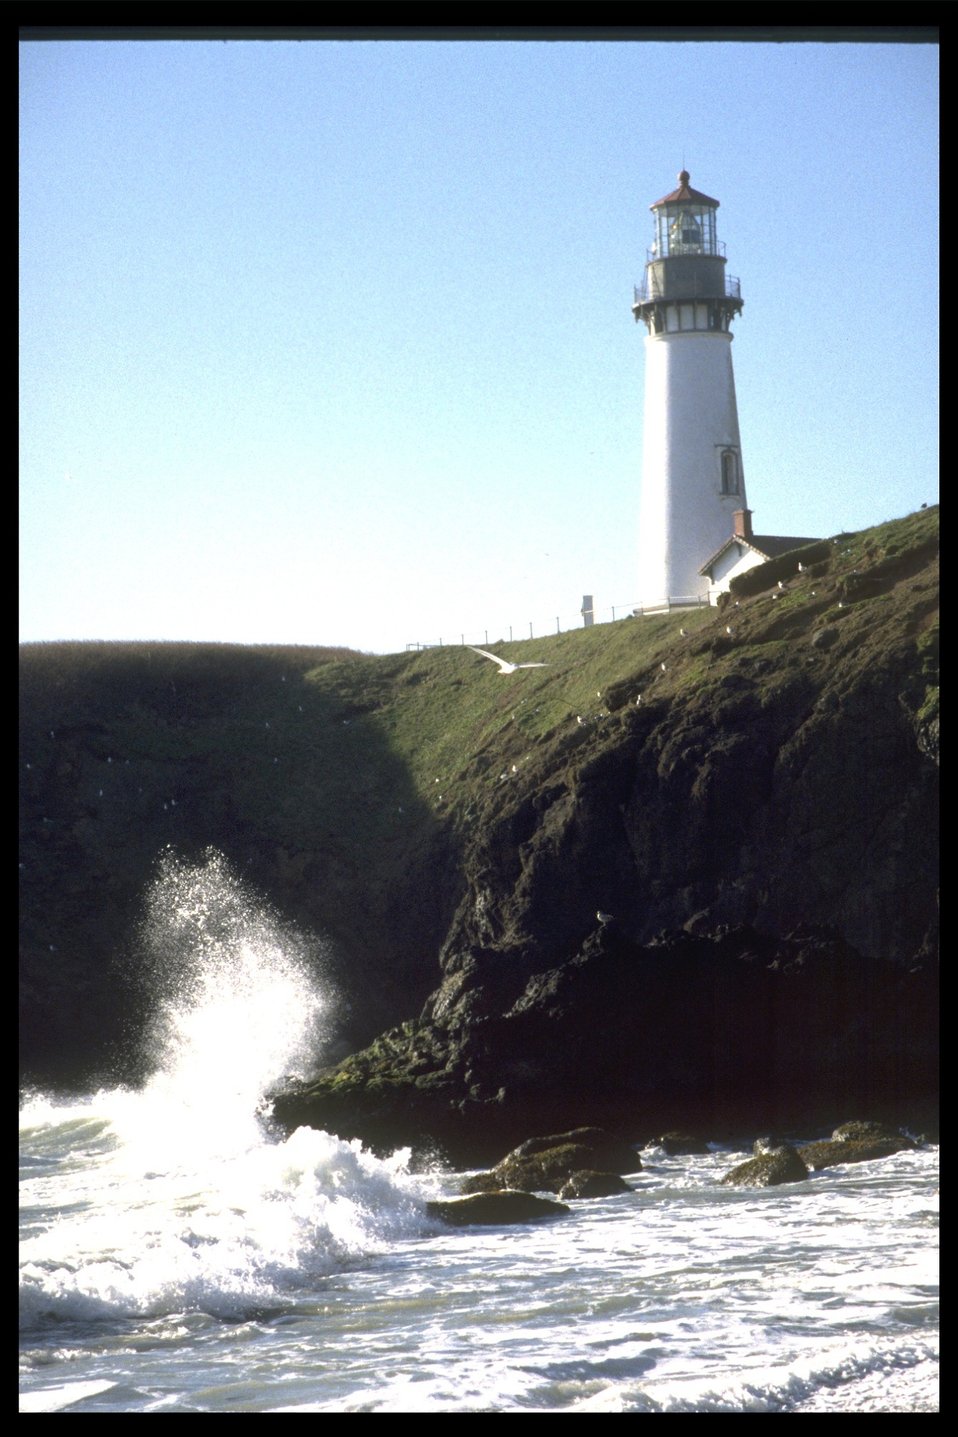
Yaquina Head Lighthouse.